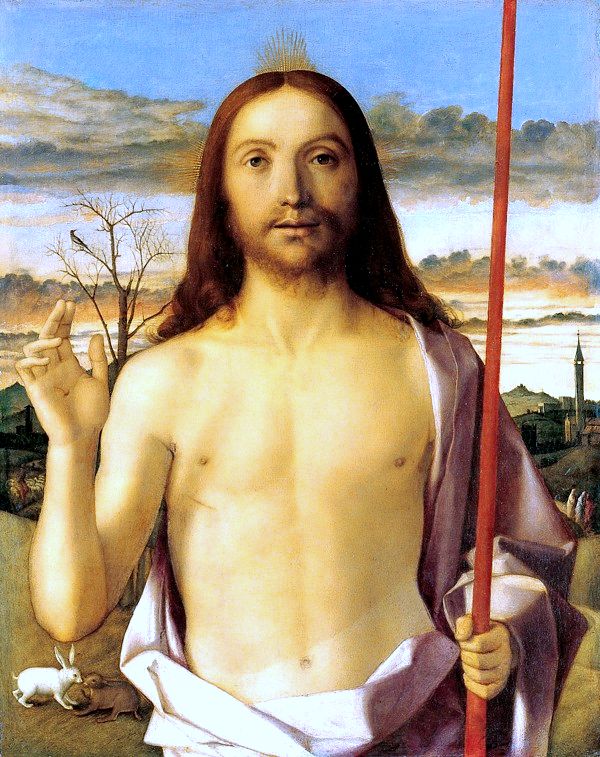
'Christ Blessing', tempera, oil, and gold on panel by Giovanni Bellini, c. 1500, Kimbell Art Museum